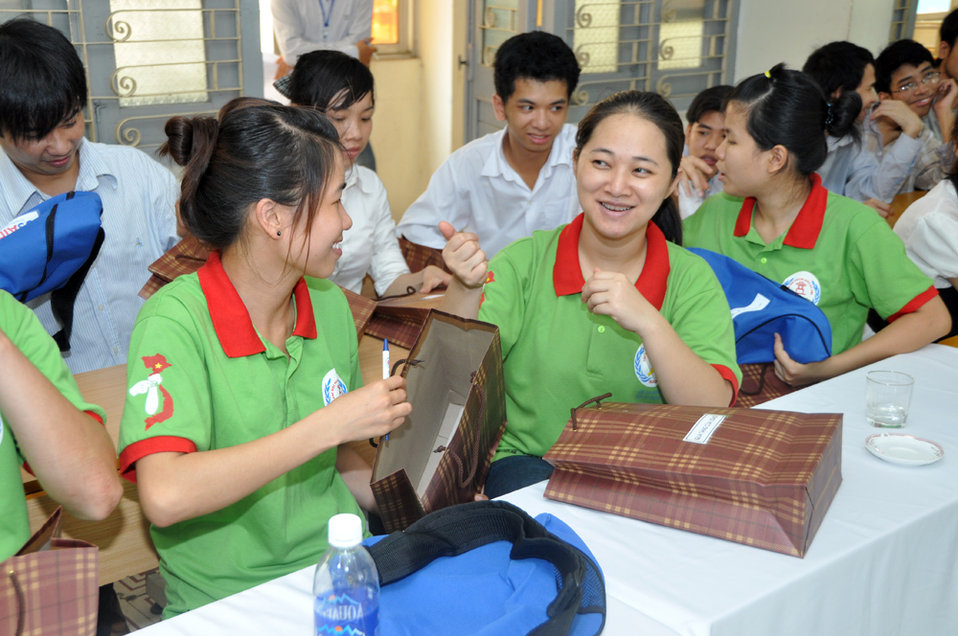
Hearing Impaired Graduates receive USAID 50th shoulder bags on June 22, 2011.